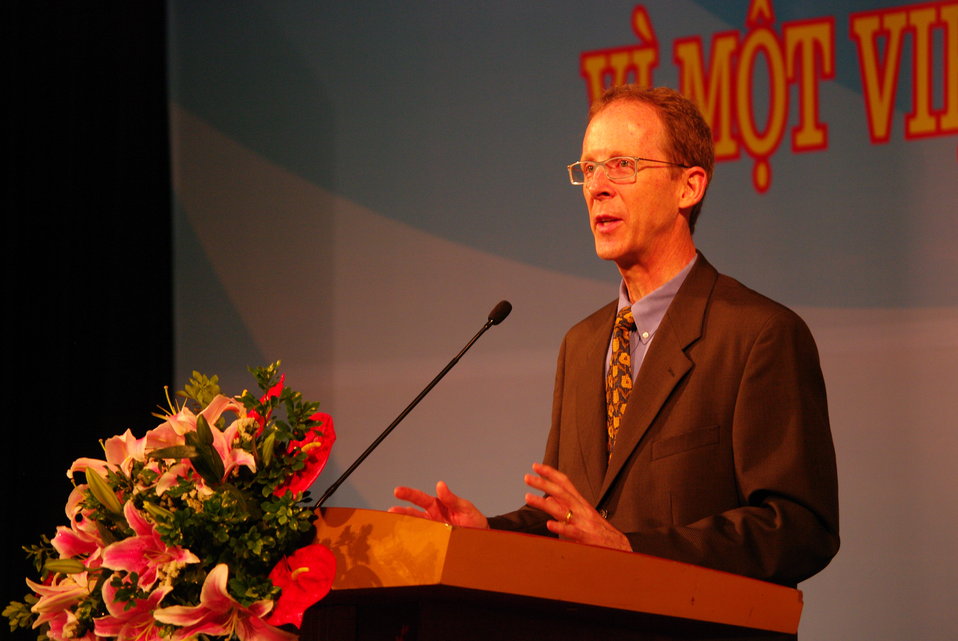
USAID Mission Director Joakim Parker speaks at Vietnam's World TB Day Event in Hanoi

March 23, 2013